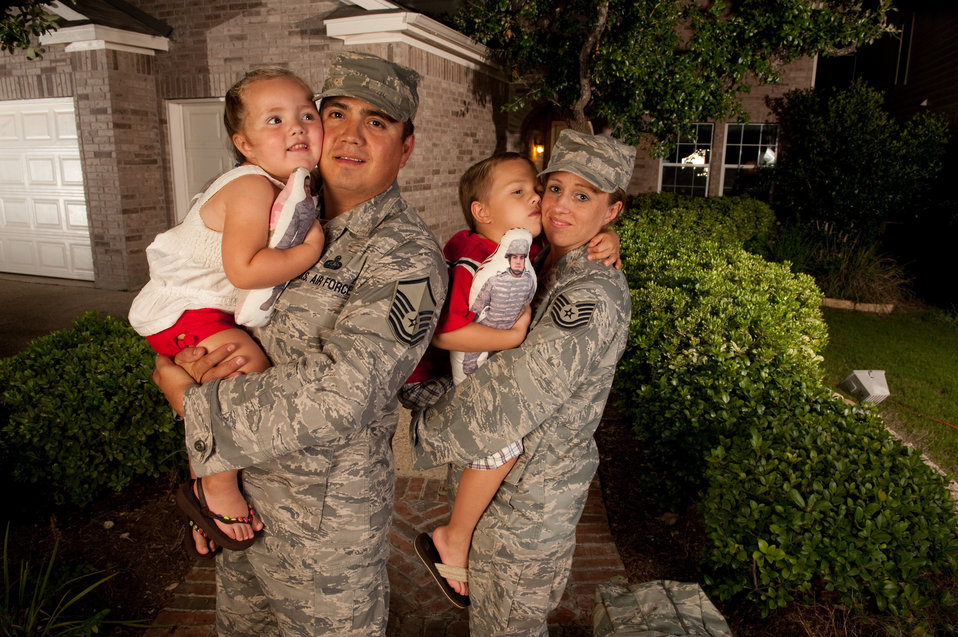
Blogging Couple Deployment preperation

The Gamez family - Master Sgt. Rudy Gamez (left) holds his daughter Eva, 3 while his wife Tech. Sgt Christina Gamez holds her son Tomas, 4 in front of their home in San Antonio, Texas, on July 13, 2010. Later this year he and his wife will both be deployed and blog about their experiences.